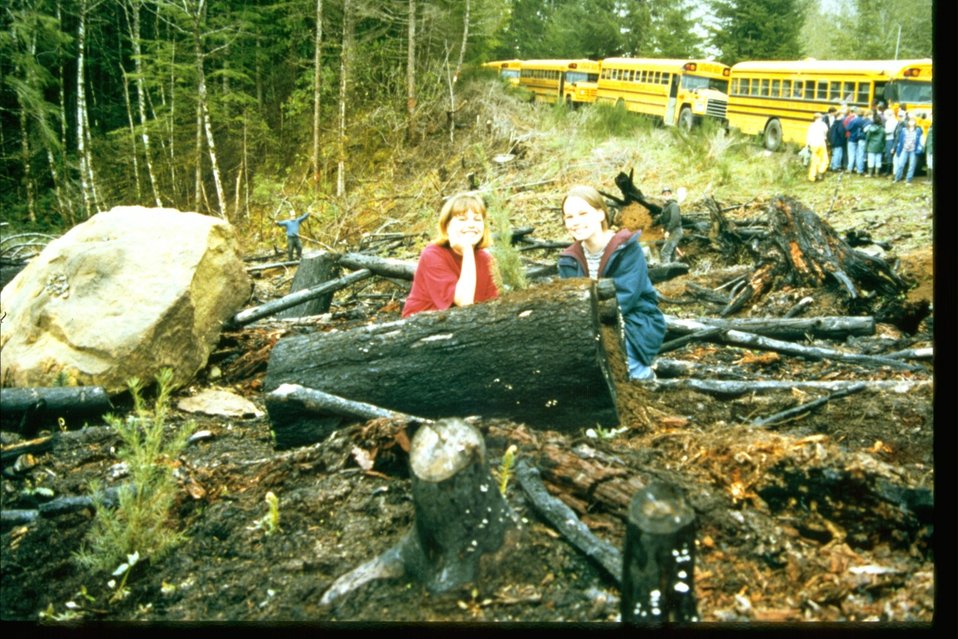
Lower Umpqua Treeplanting.